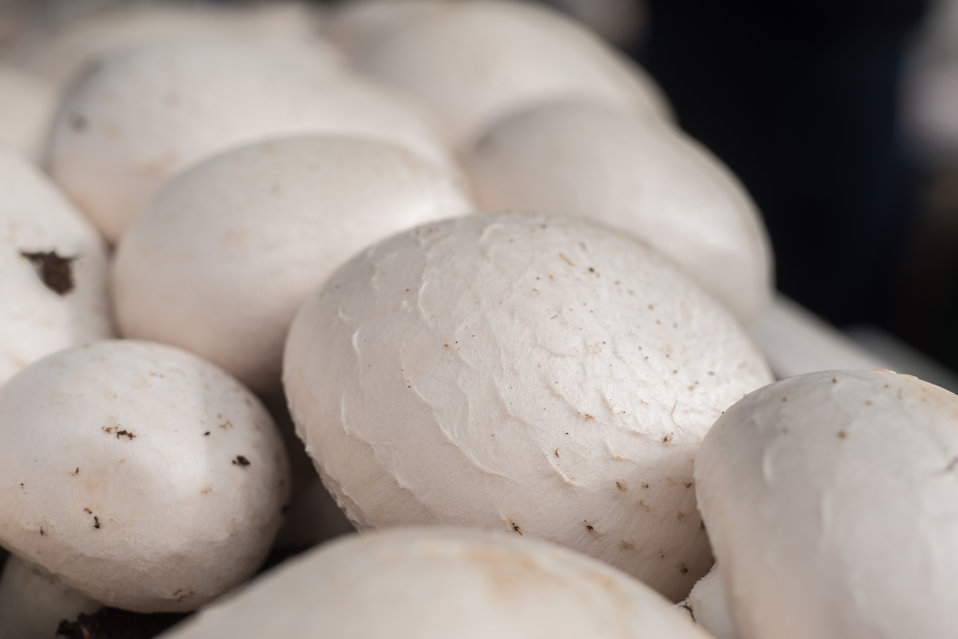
White button mushrooms on display at the U.S. Department of Agriculture (USDA) farmers markets and Harvest Festival at the USDA Whitten Building east parking lot in Washington, DC, on Friday, November 22, 2013.